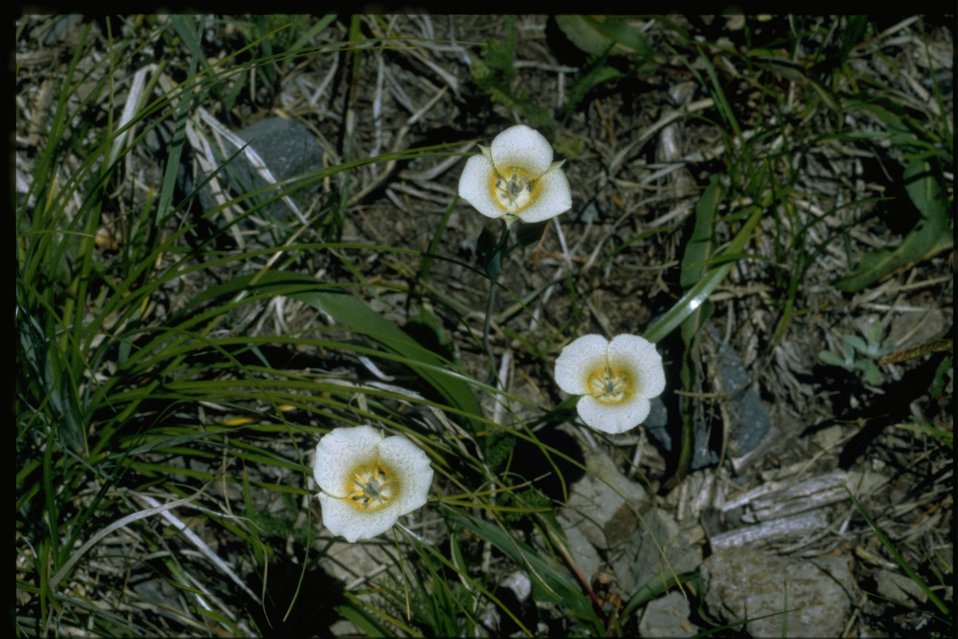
Medium shot of Calochortus subalpinus.